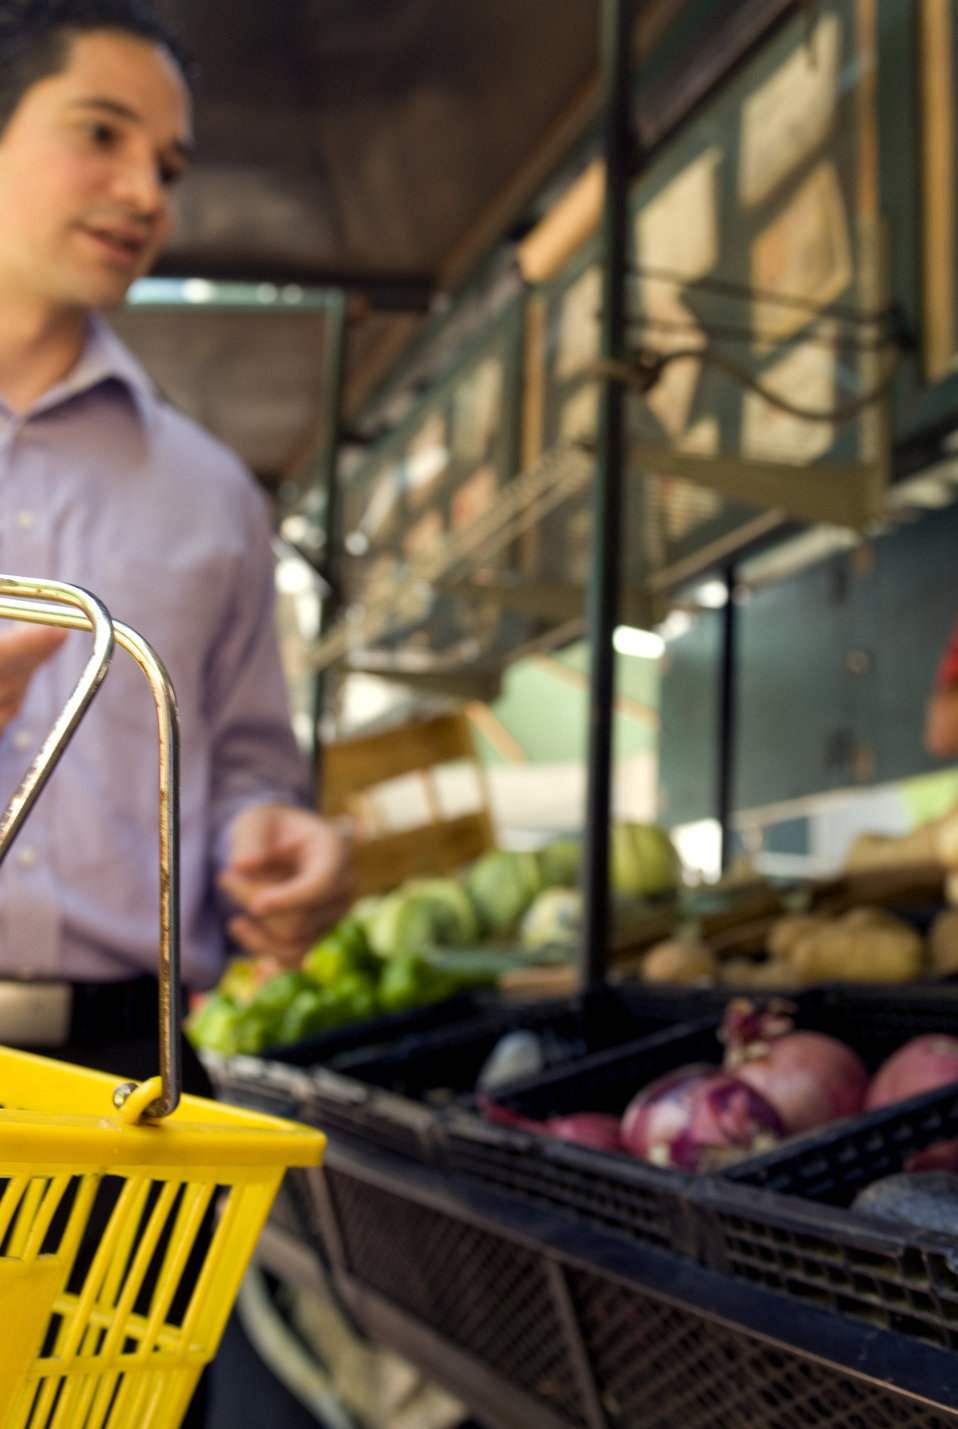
The man pictured here, was in the process of making some healthy food choices during his shopping adventure at a mobile produce market, which he would place into a yellow plastic basket he was carrying in his right hand.